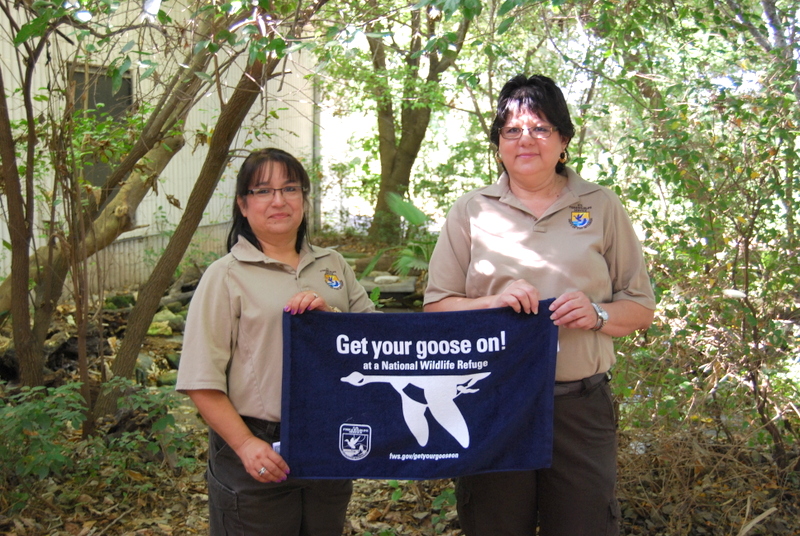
Get Your Goose On!

Photo taken at Santa Ana National Wildlife Refuge in southern Texas.